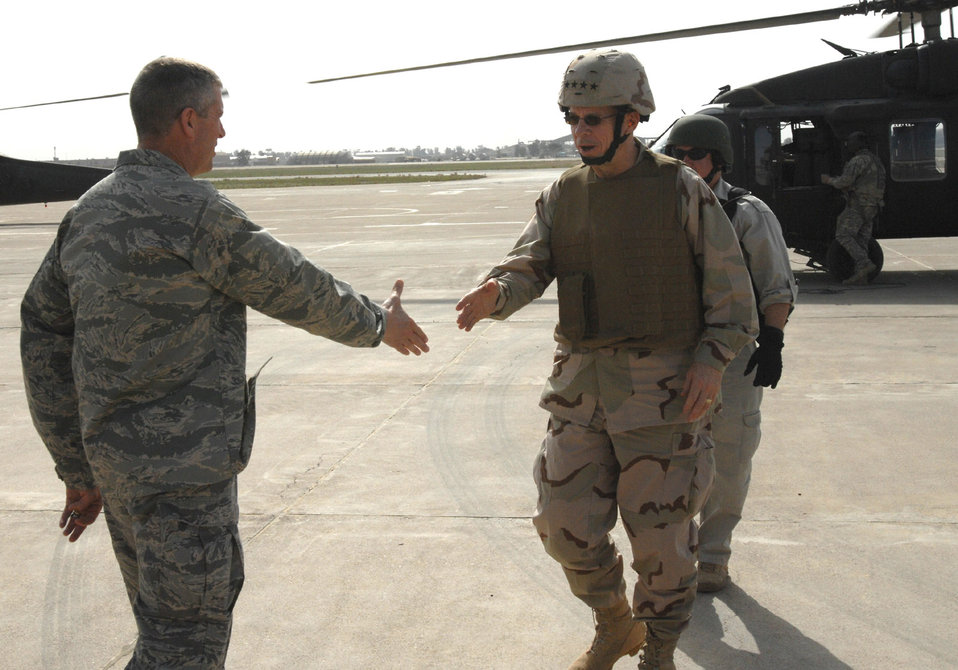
Joint Chiefs chairman visits servicemembers in Kirkuk

Col. Timothy Strawther greets Chairman of the Joint Chiefs of Staff Navy Adm. Mike Mullen upon arrival during his March 2 visit to Kirkuk Air Base, Iraq. The highest ranking military officer attended meetings with the State Department Provincial Reconstruction Team, presided over a short promotion ceremony for two Army officers and had dinner with several Airmen and Soldiers during his visit. Colonel Strawther is the 506th Air Expeditionary Group commander.